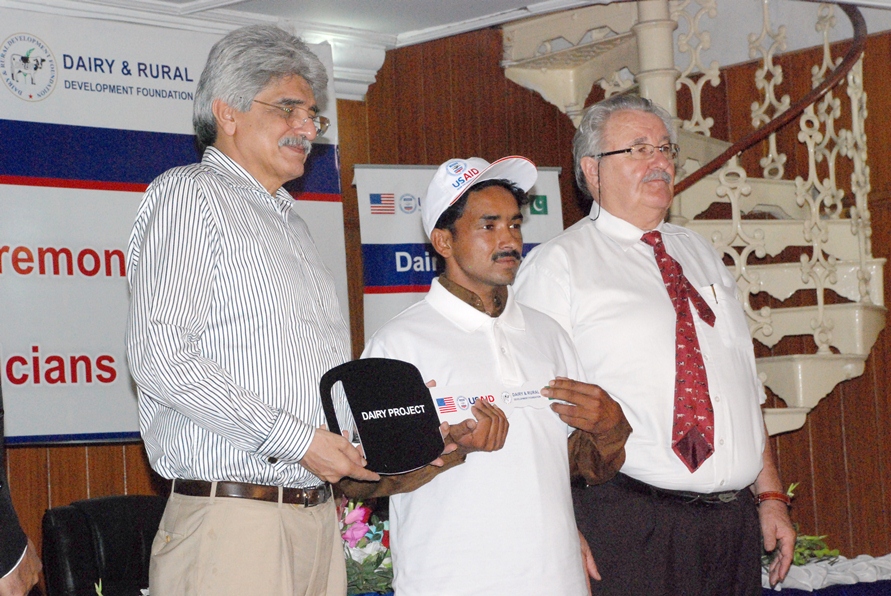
Dairy Project Director Jack Moser and chairman DRDF Mr. Salman Shah presenting motorcycle keys to a successfull AI technician